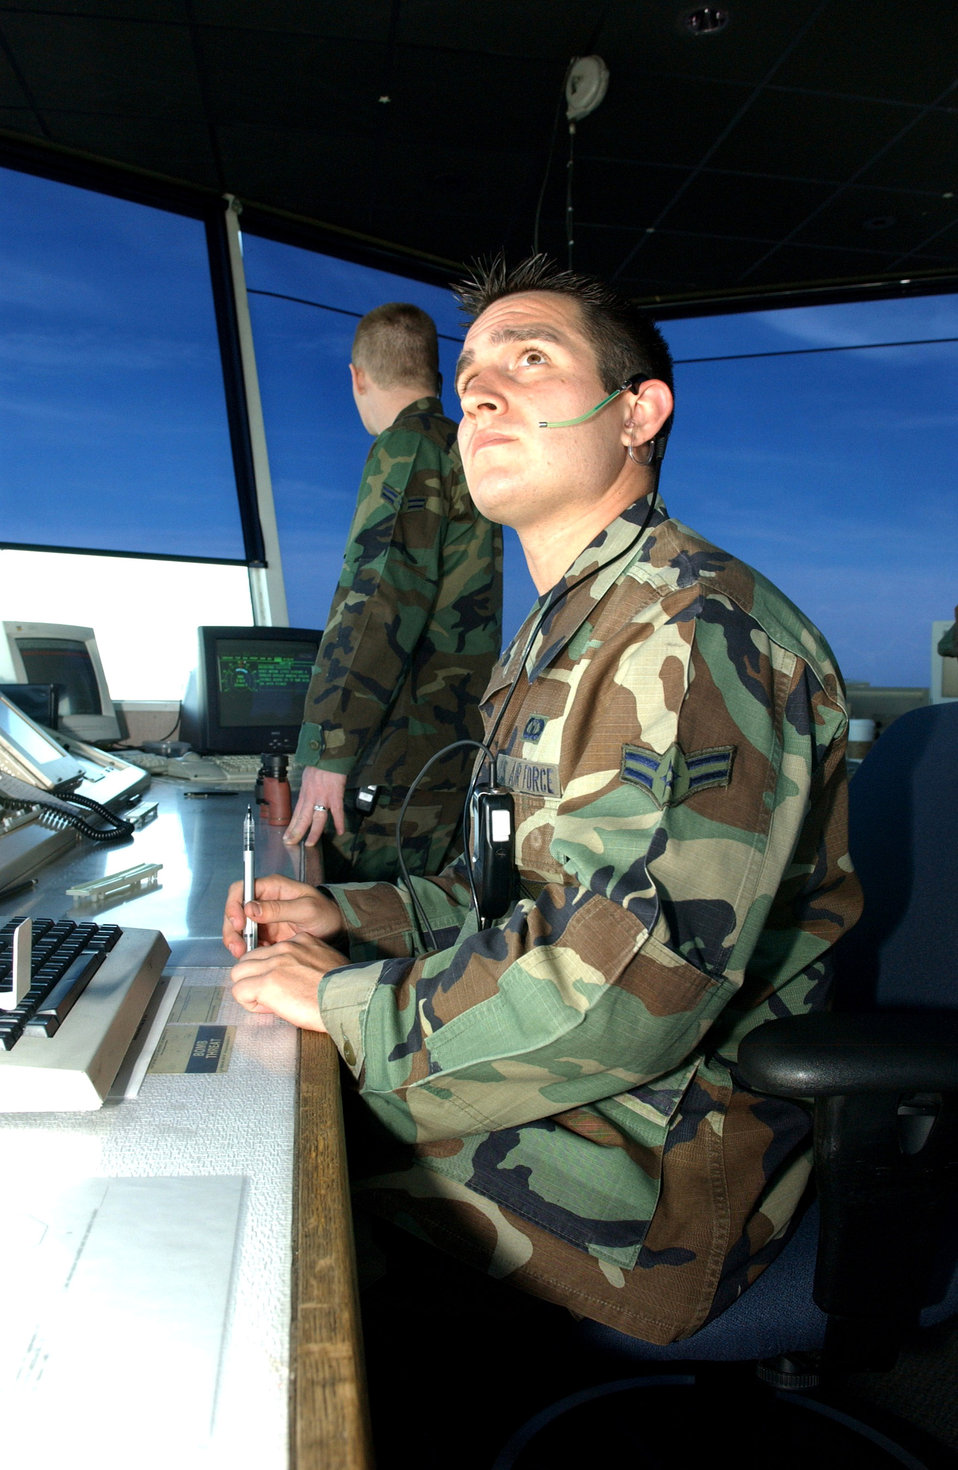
Cleared for takeoff

Airman 1st Class Brian Stocks checks the flight radar May 23 at Eielson Air Force Base, Alaska. Airman Stocks is an air traffic controller with the 354th Operations Support Squadron.